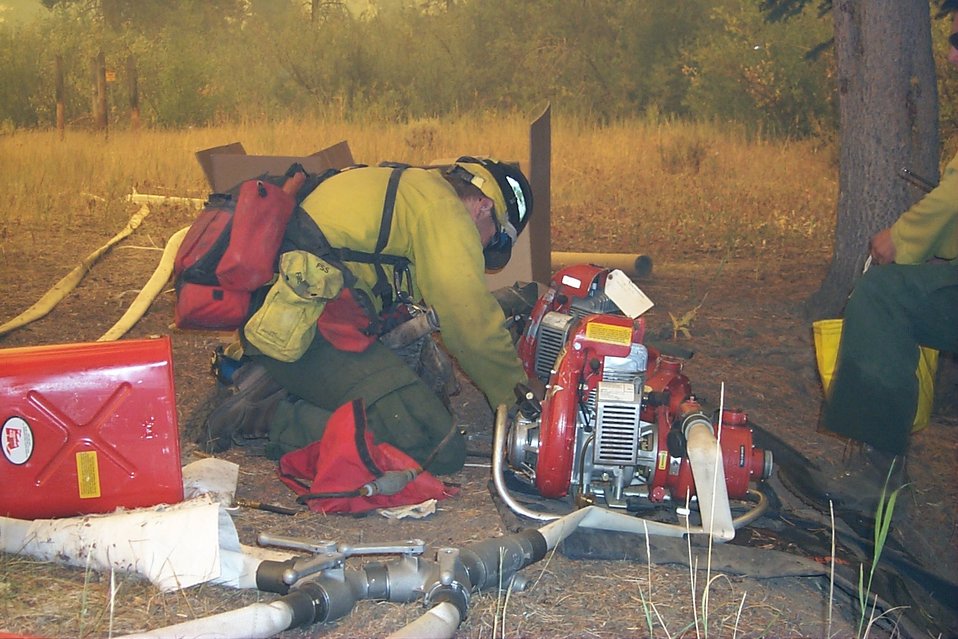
Water pump Fire Clearwater Fire Salmon Field Office USRD Upper Snake River District